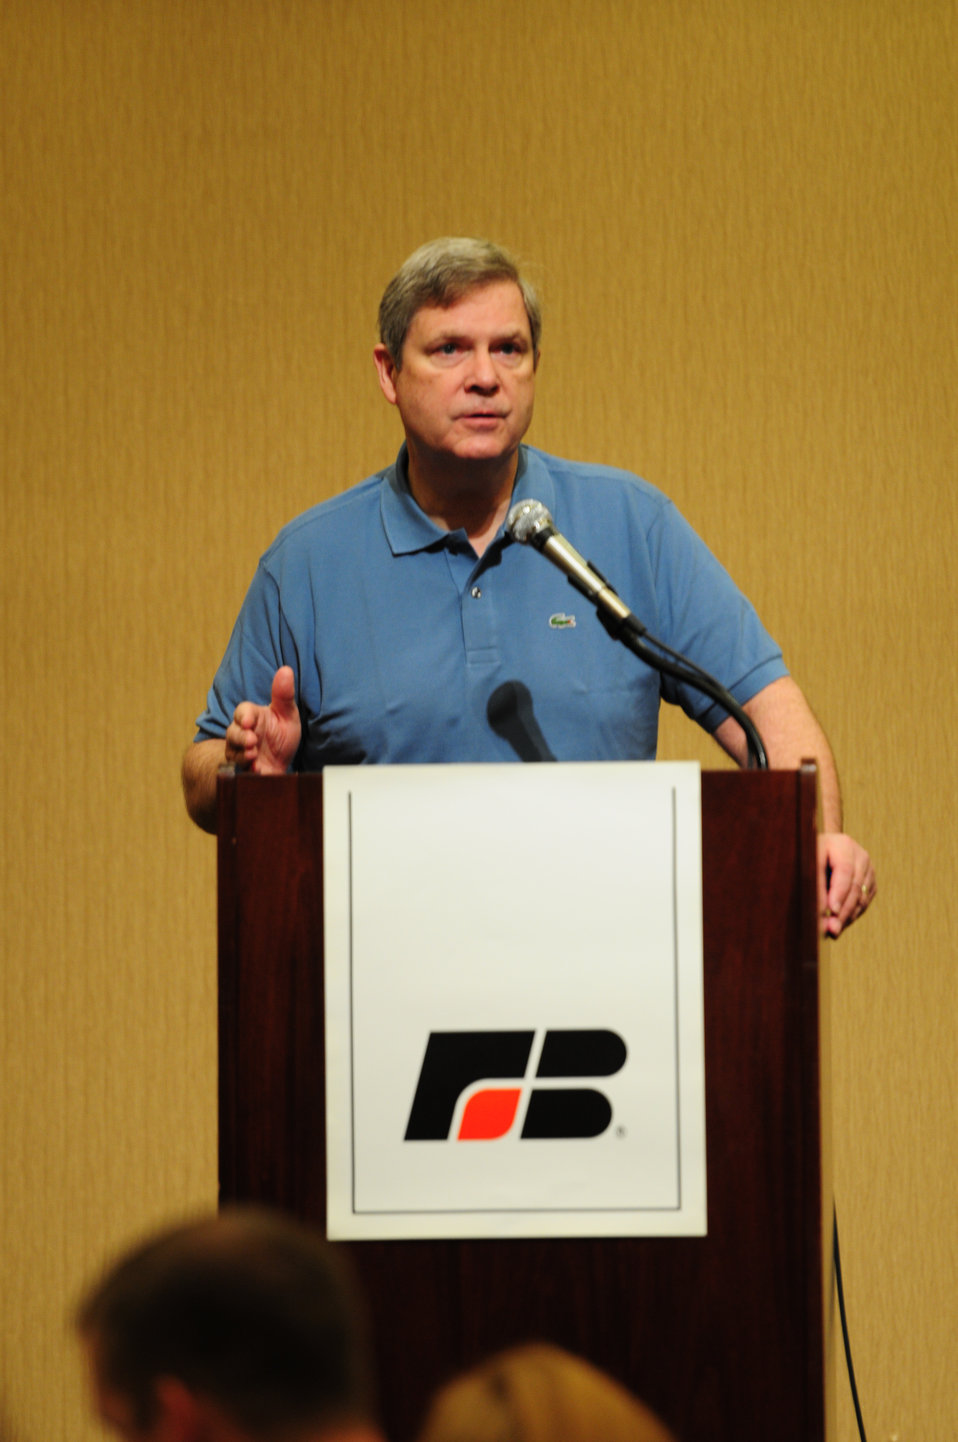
Agriculture Secretary Tom Vilsack speaks at the Iowa Farm Bureau event at the Sheridan Waikiki, in Honolulu, Hawaii, on Sunday, January 8, 2012.